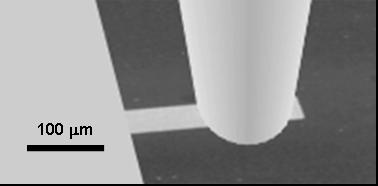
Einstein's Magnetic Effect Is Measured on Microscale

In NIST's Einstein-de Haas experiment, the movements of a cantilever were measured with an optical-fiber laser interferometer. The optical fiber is 125 micrometers in diameter, and the end is positioned less than 10 micrometers from the cantilever surface.